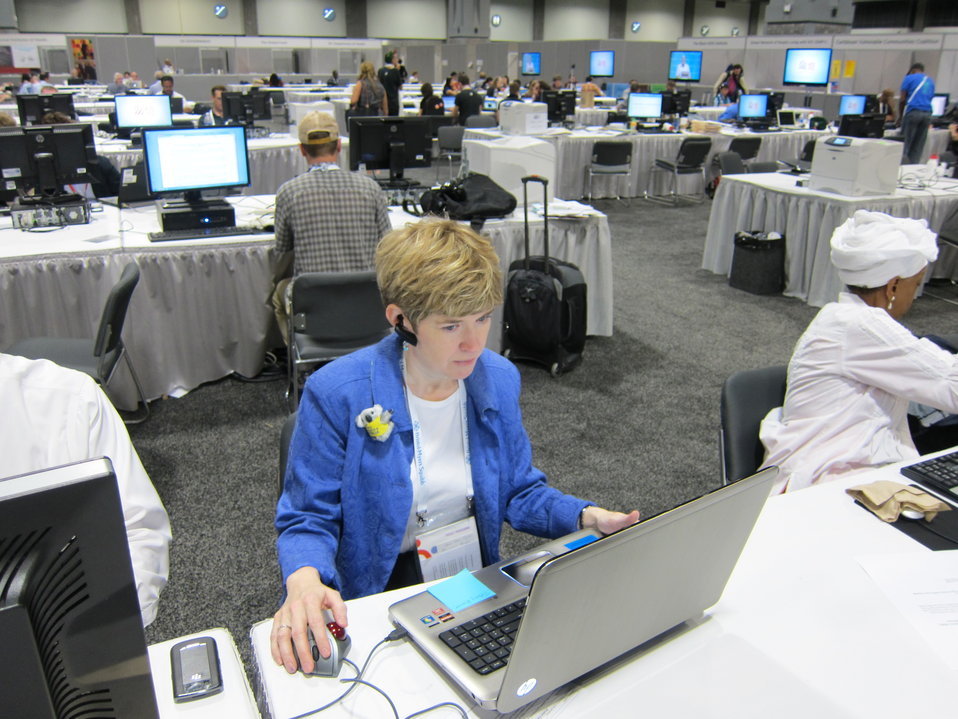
Media Centre